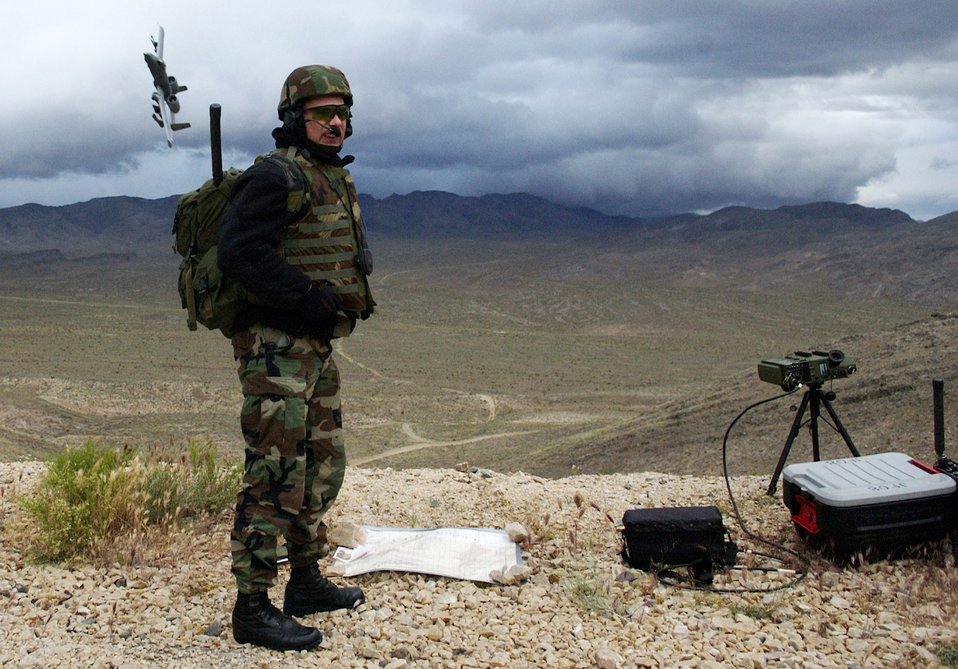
JTACs sharpen war skills in Nevada

Master Sgt. Craig Hillsman provides a